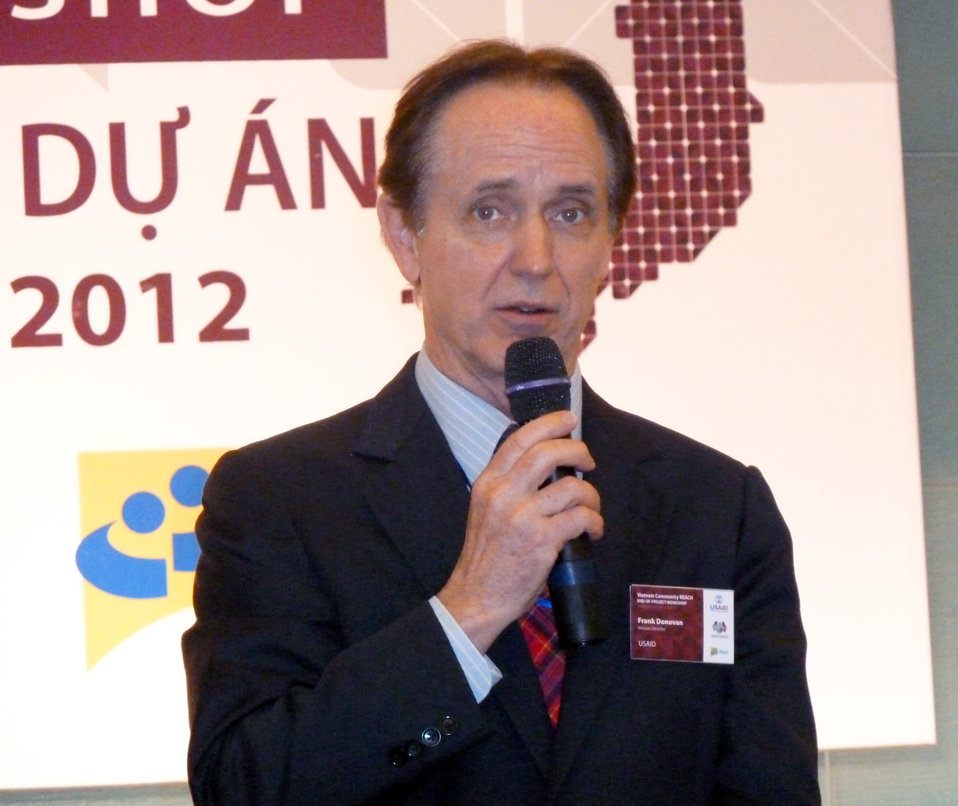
USAID Mission Director Francis Donovan addresses participants at the Community REACH project workshop

Community REACH project close-out with USAID and implementing partner, Pact